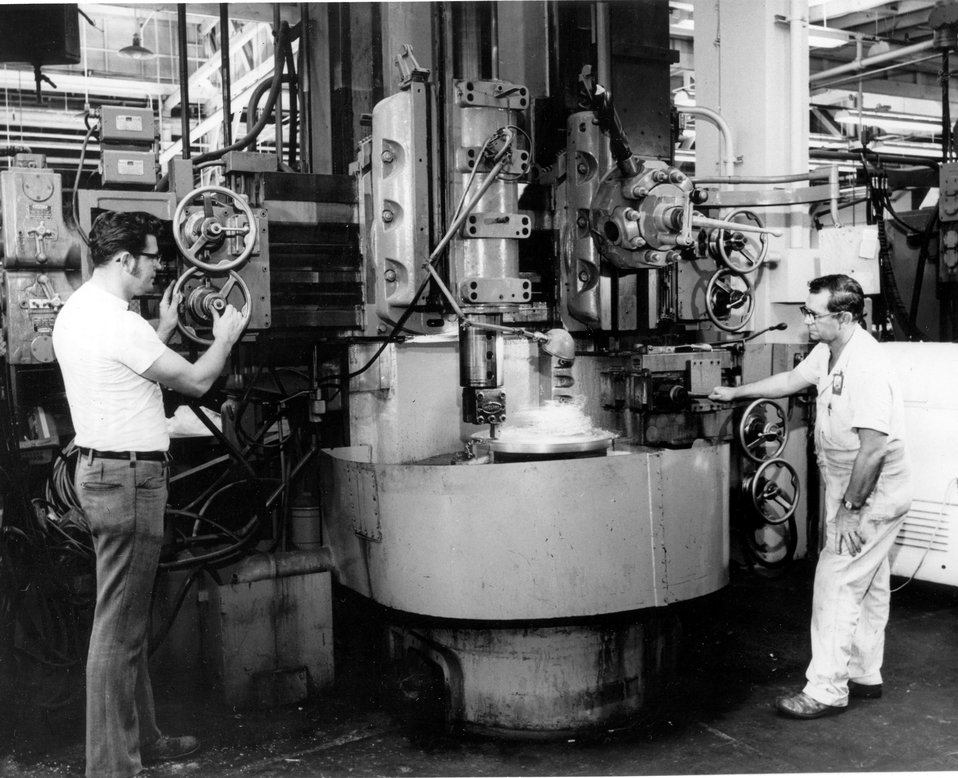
The Training and Technology programs at the Oak Ridge Y-12 Plant in Tennessee, has graduated approximately 2,000 students since its beginning in 1966. c. 1972